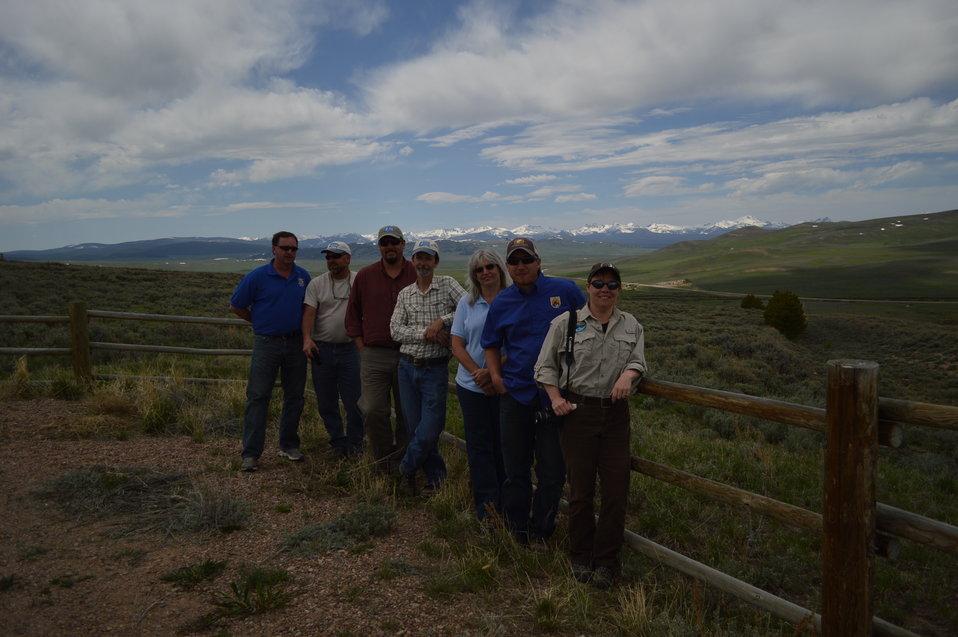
Regional Leadership Visit to Montana 2014